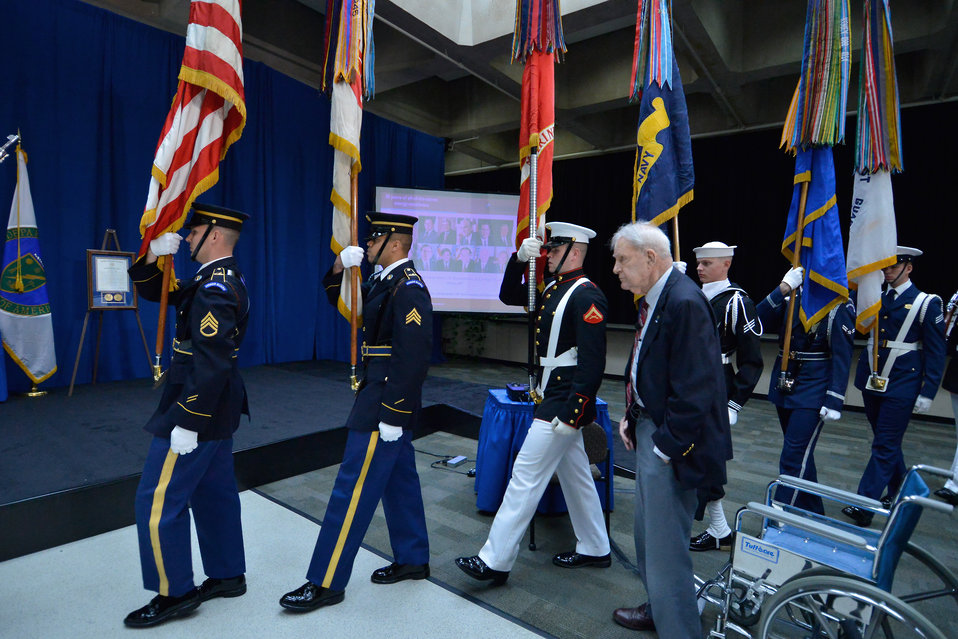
Color Guard

The Joint Armed Forces Honor Guard presents the colors at the start of the 35th Anniversary and Honors Awards on October 4, 2012. As they made their way to the stage they passed by Secretary James Schlesinger, the first Secretary of Energy and a keynote speaker at the event.